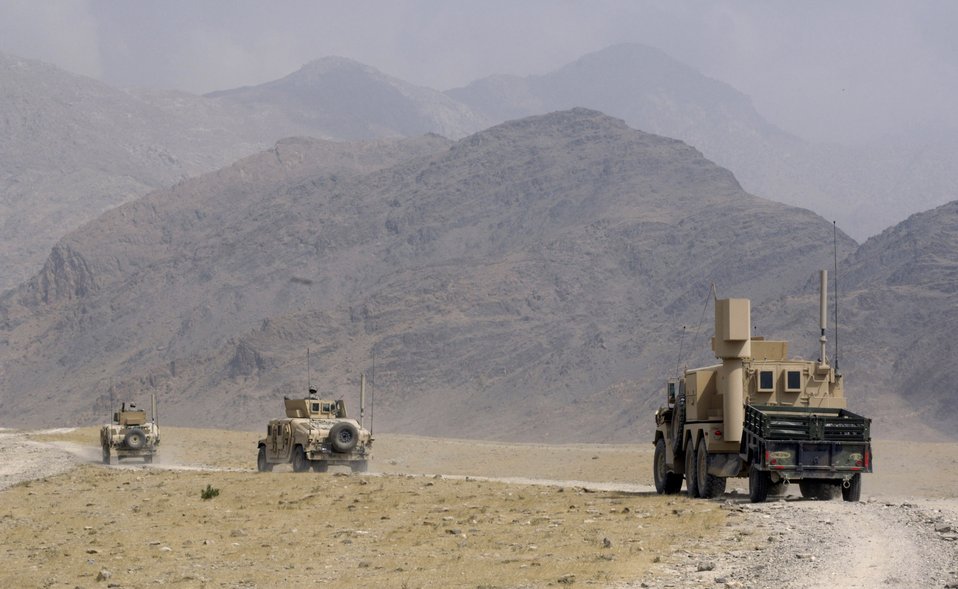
Small rewards program results in big explosion

Air Force explosive ordnance disposal specialists from Forward Operating Base Mehtar Lam, Afghanistan, travel in Humvees to prepare a site for a controlled detonation Sept. 1. Nearly 900 pounds of small arms ammunition, rocket-propelled grenades and mortars were turned in by provincial citizens.